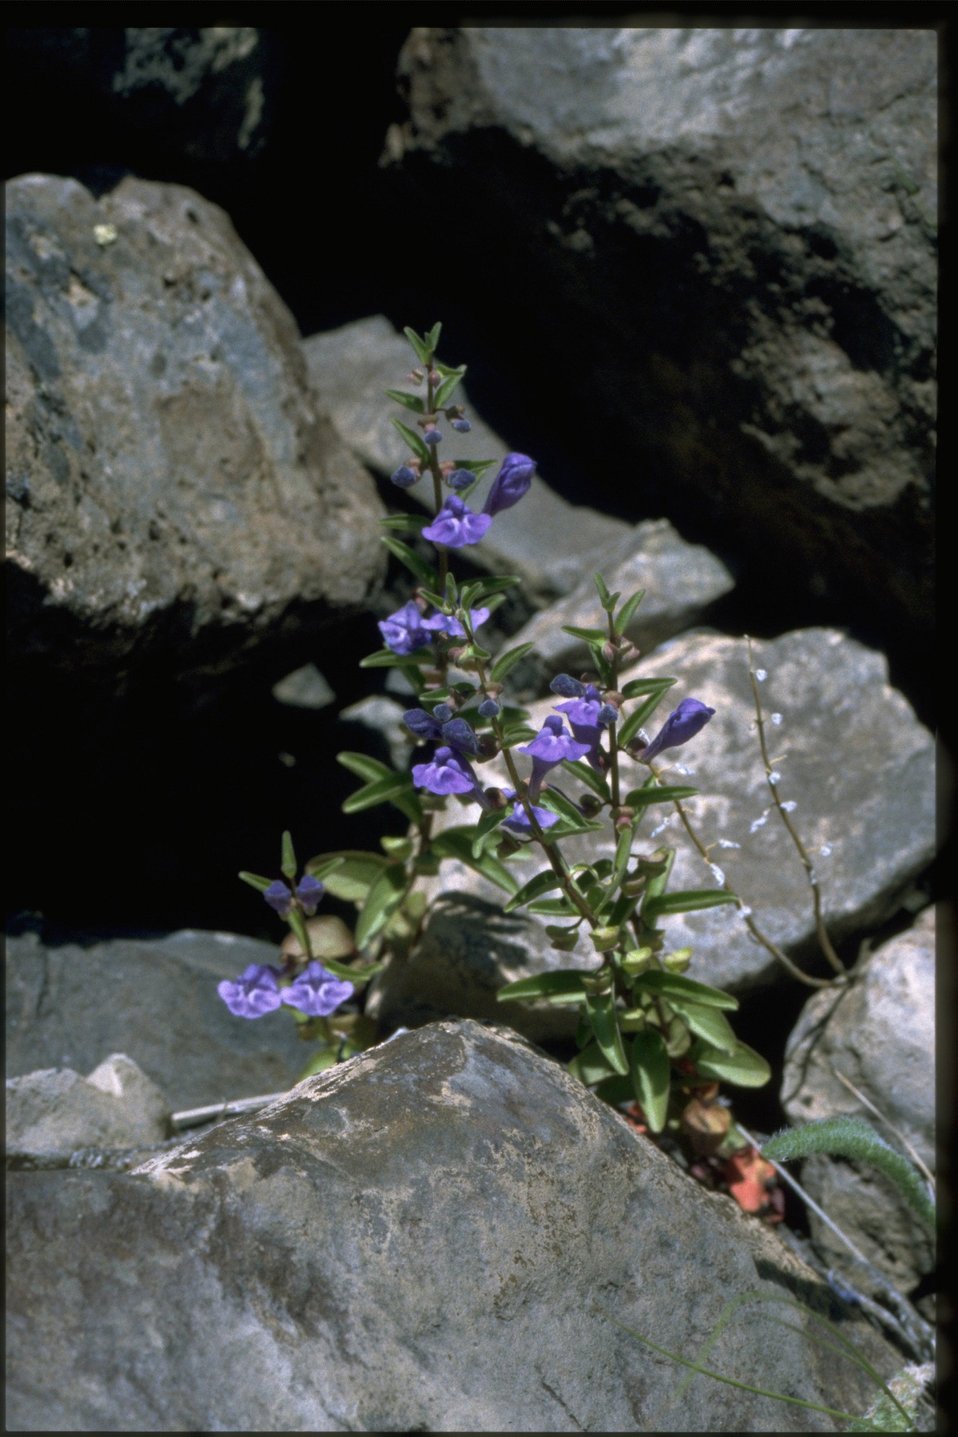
Medium shot of Narrowleaf skullcap (Scutellaria angustifolia).